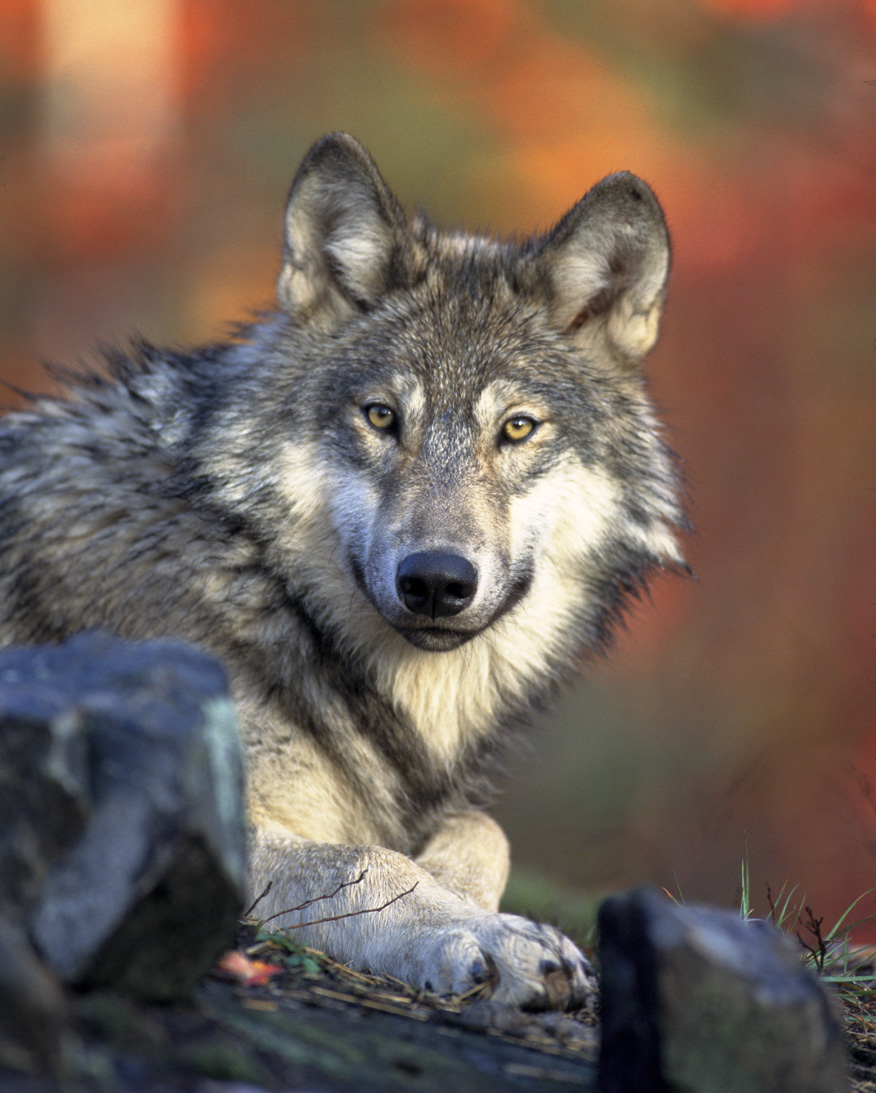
Close-up of a gray wolf.